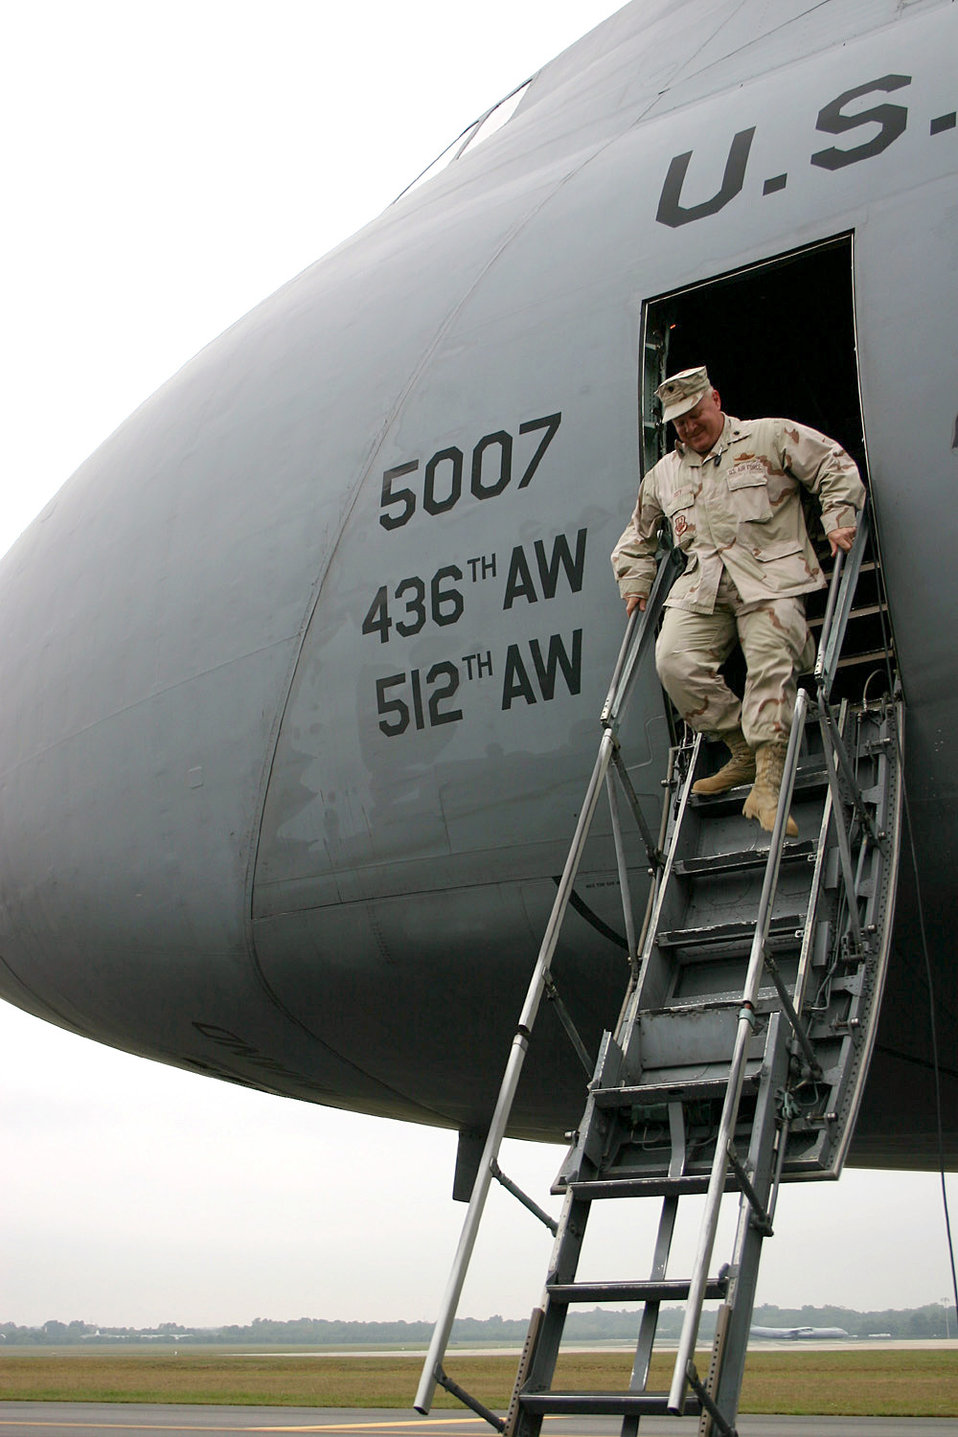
Lt. Col. serves on three AEF rotations

MCGUIRE AIR FORCE BASE, N.J. -- Lt. Col. Tim Doty steps off a plane here after spending a year in Afghanistan. The colonel is the 305th Operations Support Squadron assistant director of operations.